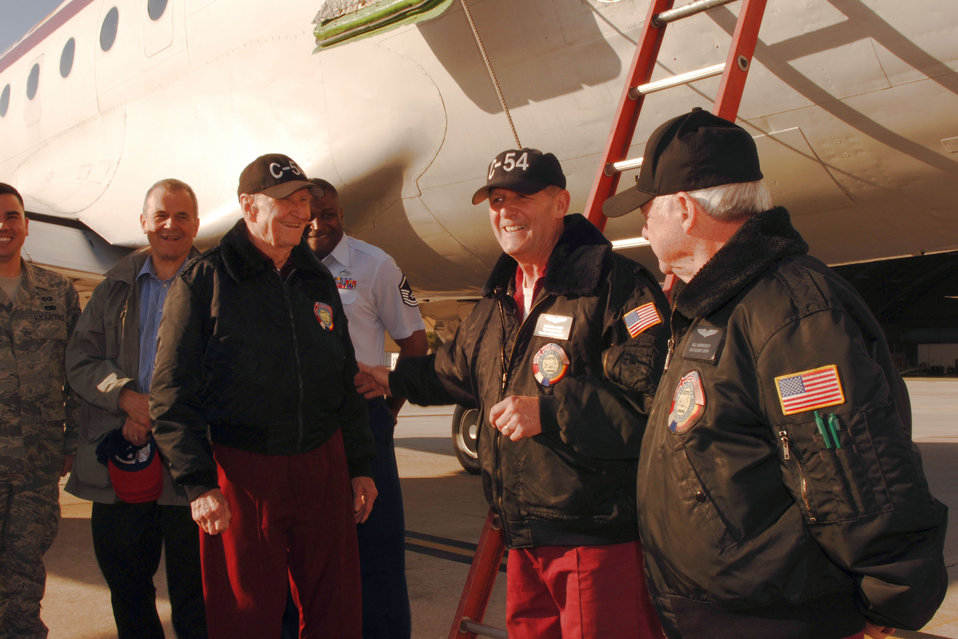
Phoenix Rally celebrates 60th Anniversary of Berlin Airlift

Retired Col. Gail Halvorsen (left to right), Tim Chopp and Bill Morrissey prepare to board a C-54 Skymaster March 24 at MacDill Air Force Base, Fla. The three made up the crew of